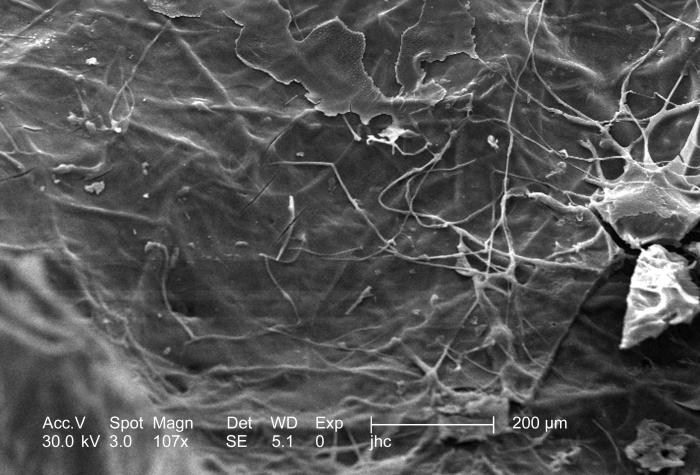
At a moderate magnification of 107x this scanning electron micrograph (SEM) depicted some of the ultrastructural details made visible of the surface of an unidentified wasps' nest found on the ground in the Decatur, Georgia suburbs. Note that the nest material takes on the appearance of woven fibers embedded in a glue-like matrix, very similar to the way in which rebar, i.e., iron textured rods, is embedding in concrete to reinforce the building material.